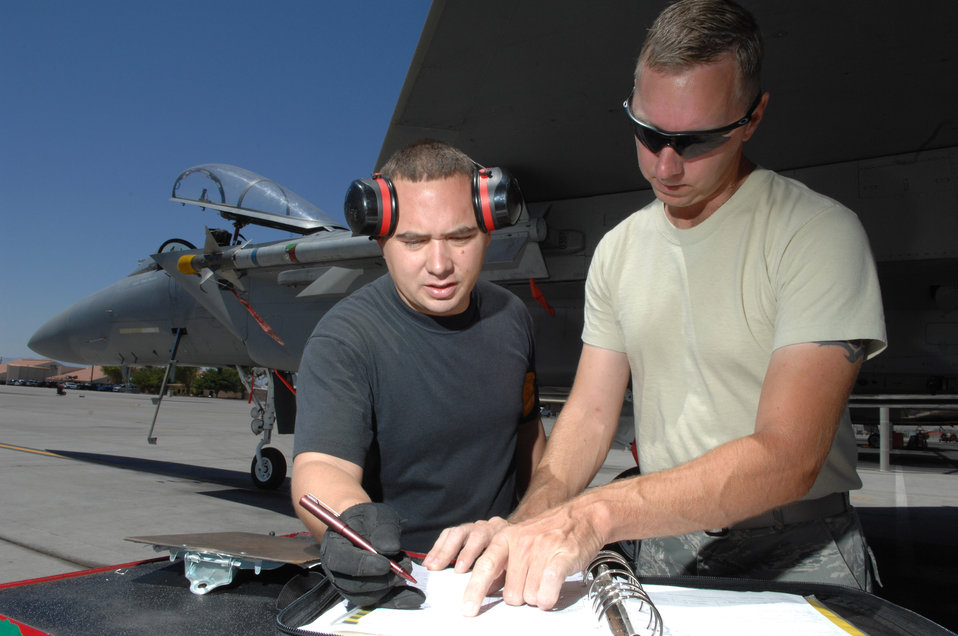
Teamwork

Staff Sgt. Richard Cordova (left) and Staff Sgt. Michael Adams sign off on a weapons second look inspection July 24 at Nellis Air Force Base, Nev. The 926th Group is an Air Force Reserve unit under the 10th Air Force, Naval Air Station Joint Reserve Base, Fort Worth, Texas. The group is located at Nellis AFB as an associate unit to the Air Force Warfare Center. Through total force integration, reservists are integrated into active duty Air Force units, accomplishing the mission alongside active-duty Airmen on a daily basis. Sergeant Cordova is an F-15 Eagle weapons specialist assigned to the 926th Group Det. 2, and Sergeant Adams is a 57th Aircraft Maintenance Squadron F-15 expediter.